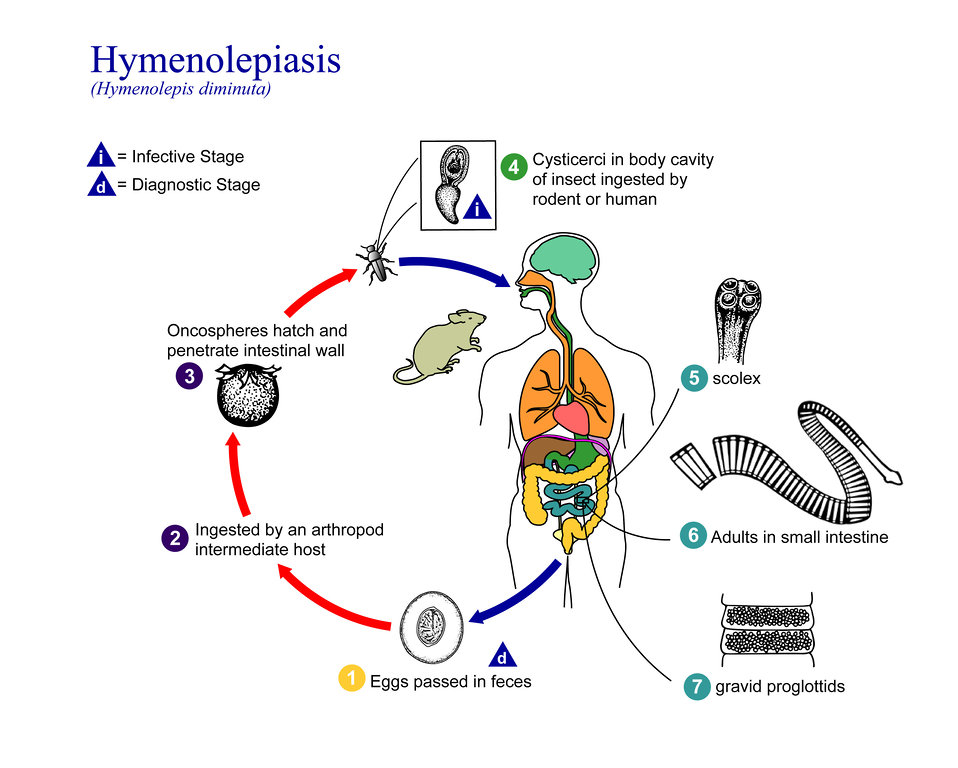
This is an illustration of the life cycle of Hymenolepis diminuta, the causal agent of Hymenolepiasis.